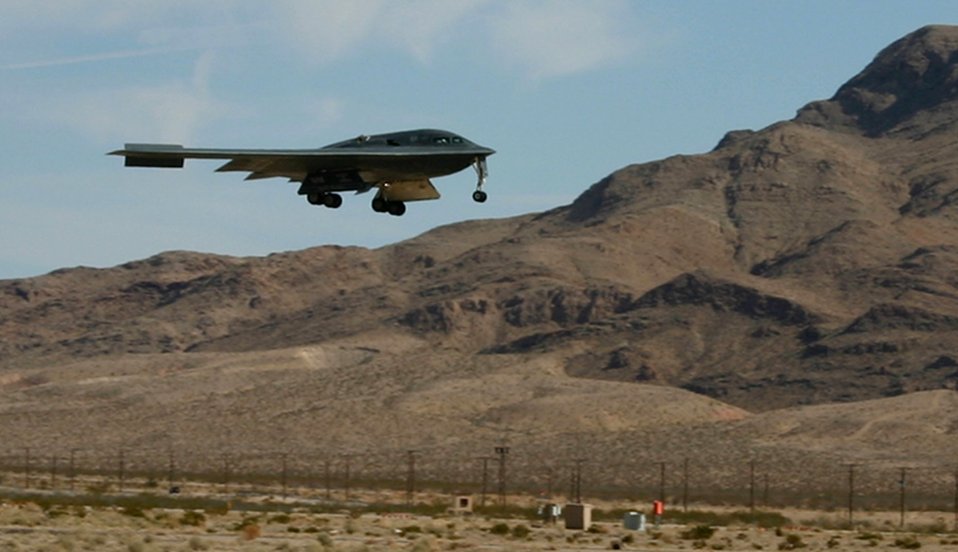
Red Flag turns stealthy

A B-2 Spirit lands after a Red Flag mission Feb. 12 at Nellis Air Force Base, Nev. All three of the Air Force's stealth aircraft models, the B-2 Spirit, F-117 Nighthawk and F-22, are taking part in Red Flag, which sharpens aircrews' warfighting skills in realistic combat situations. Crews are flying missions during the day and night to the nearby Nevada Test and Training Range where they take part in highly realistic aerial combat. The Air Force and Navy, along with Australia and the United Kingdom militaries, are participating in this Red Flag.